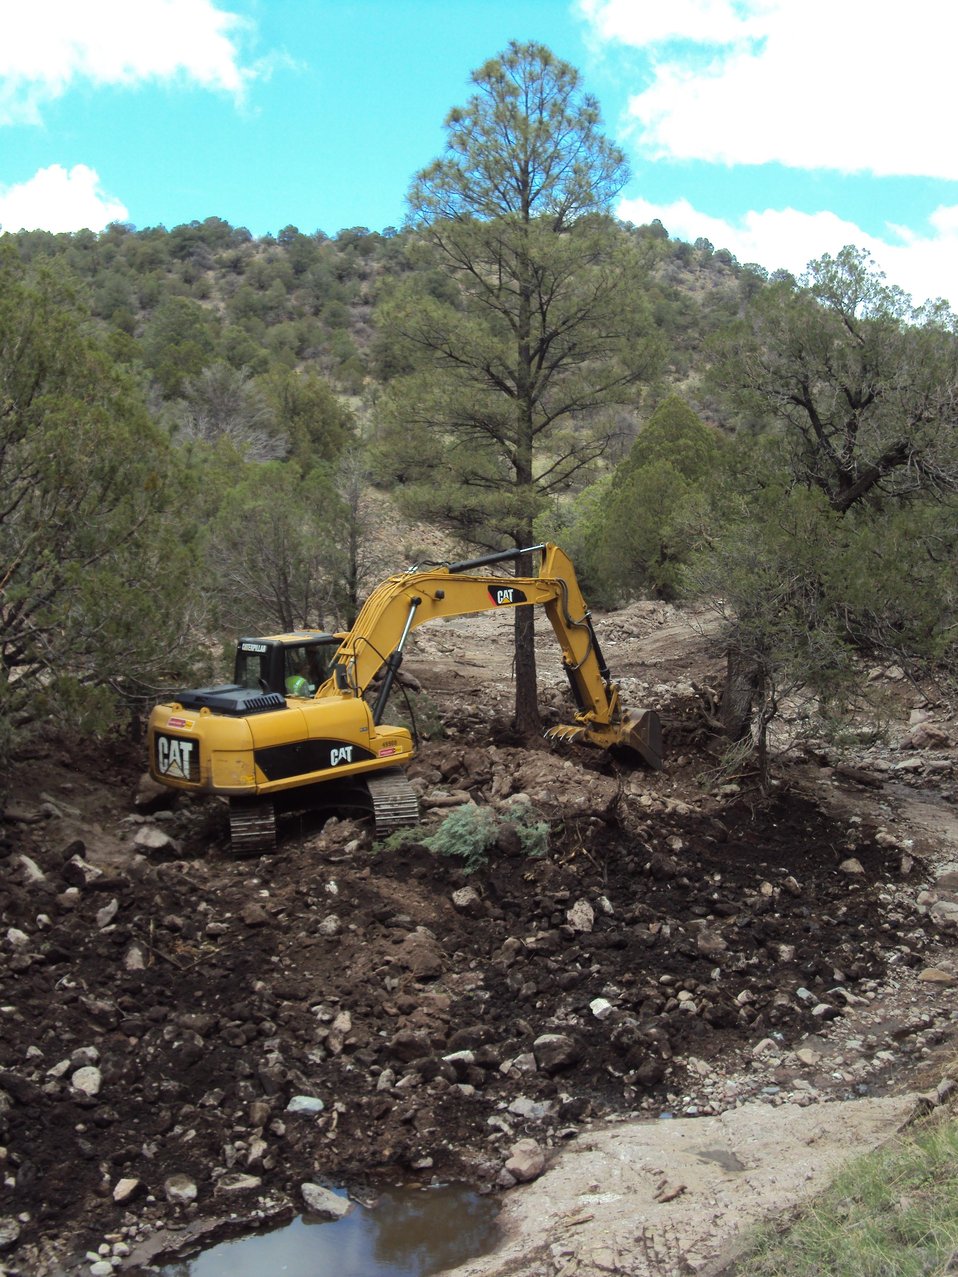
U.S. Forest Service road crewmember improves road crossing in the Gila National Forest, NM. The roads have become clogged with debris from the Silver Fire in the Gila National Forest near Kingston, NM. The Silver Fire in Gila National Forest near Kingston, NM began on Jun. 7, 2013 by a lightning strike has burned an estimated 138,705 acres and is 85% contained.